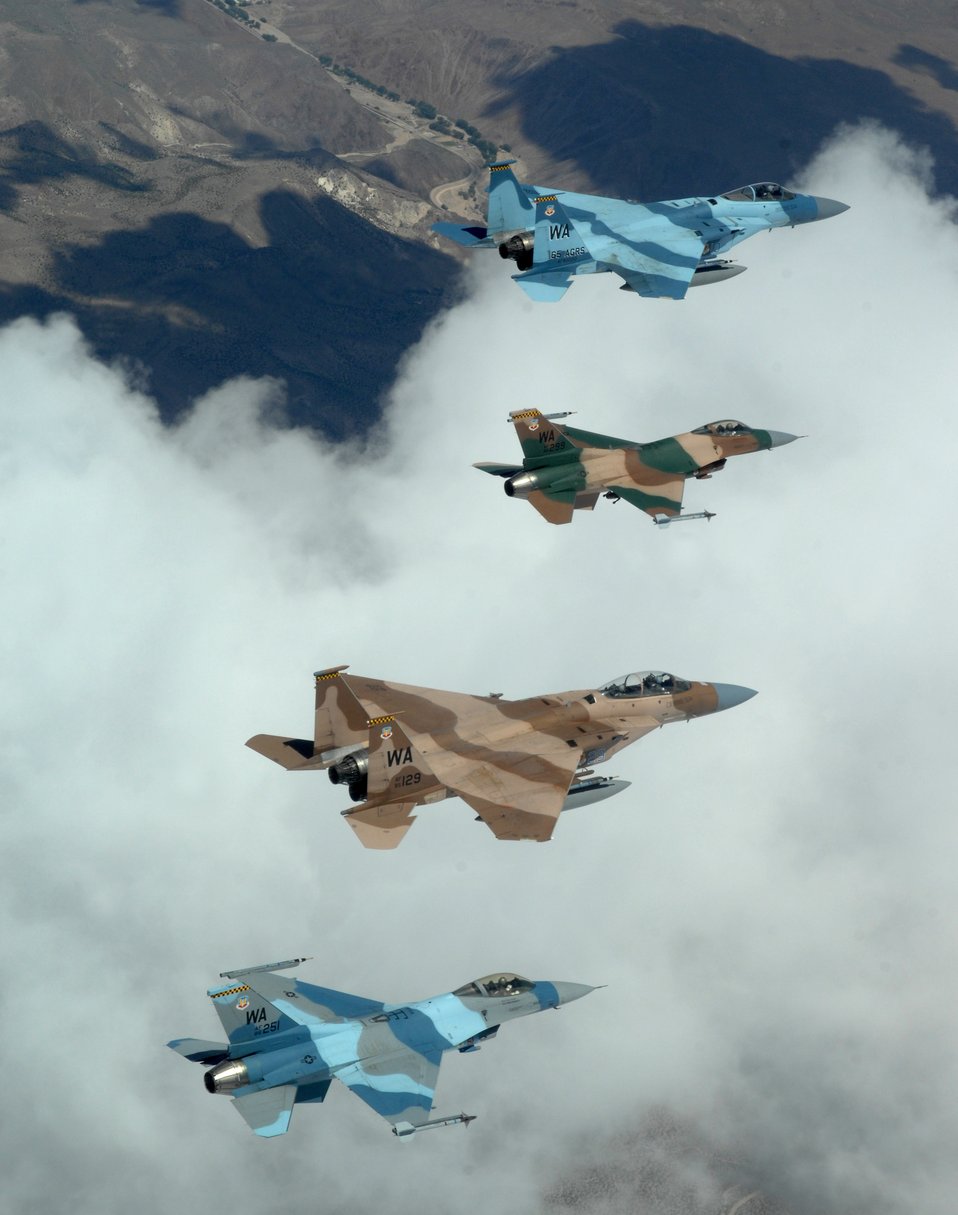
Aggressors provide challenging, realistic threat replication

A flight of Aggressor F-15 Eagles and F-16 Fighting Falcons fly in formation June 5 over the Nevada Test and Training Range. The jets are assigned to the 64th and 65th Aggressor squadrons at Nellis Air Force Base, Nev. The F-15 has electronic systems and weaponry to detect, acquire, track and attack enemy aircraft while operating in friendly or enemy-controlled airspace. The F-16 can locate targets in all weather conditions and detect low-flying aircraft in radar ground clutter.